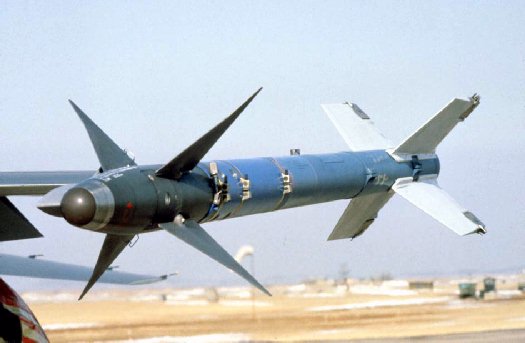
AIM-9 SIDEWINDER